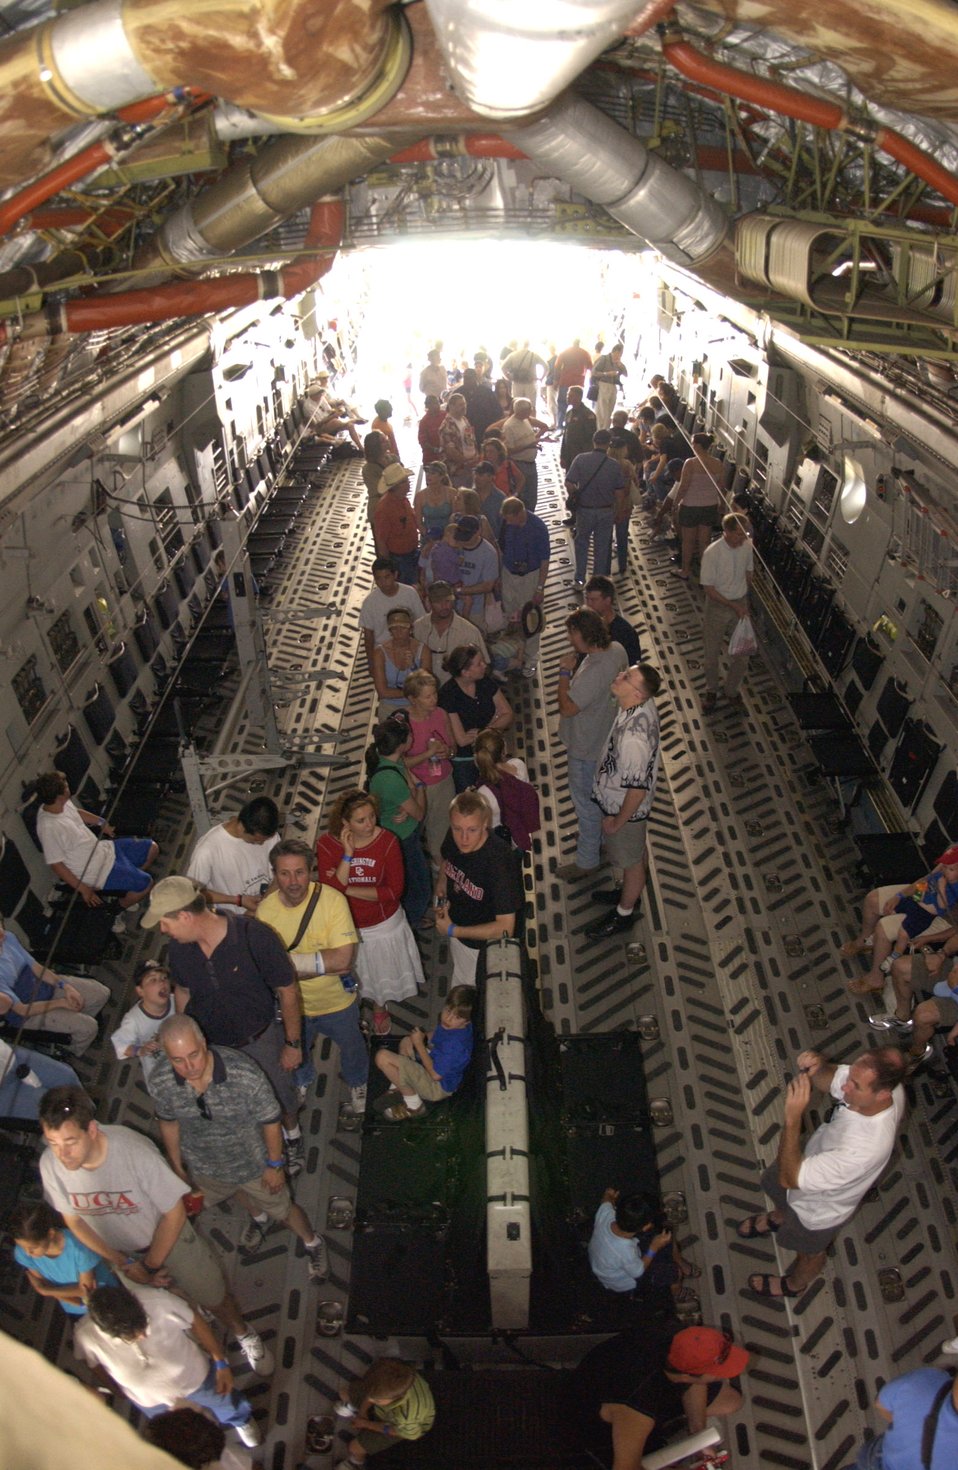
National Air and Space Museum family day wows visitors

Visitors get an inside look at a C-17 Globemaster III during the